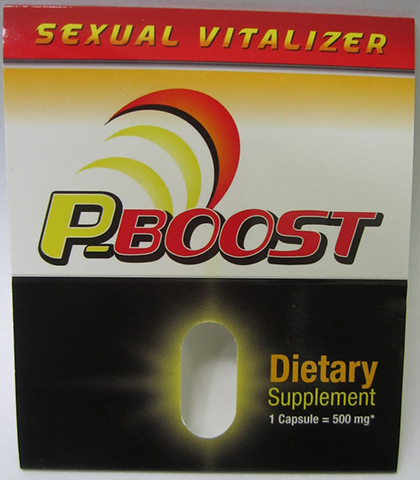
RECALLED – Dietary Supplements

November 19, 2013 – Product Recall – Tendex Issues Voluntary Nationwide Recall of P-Boost, NatuRECT Due to Undeclared Active Ingredients.